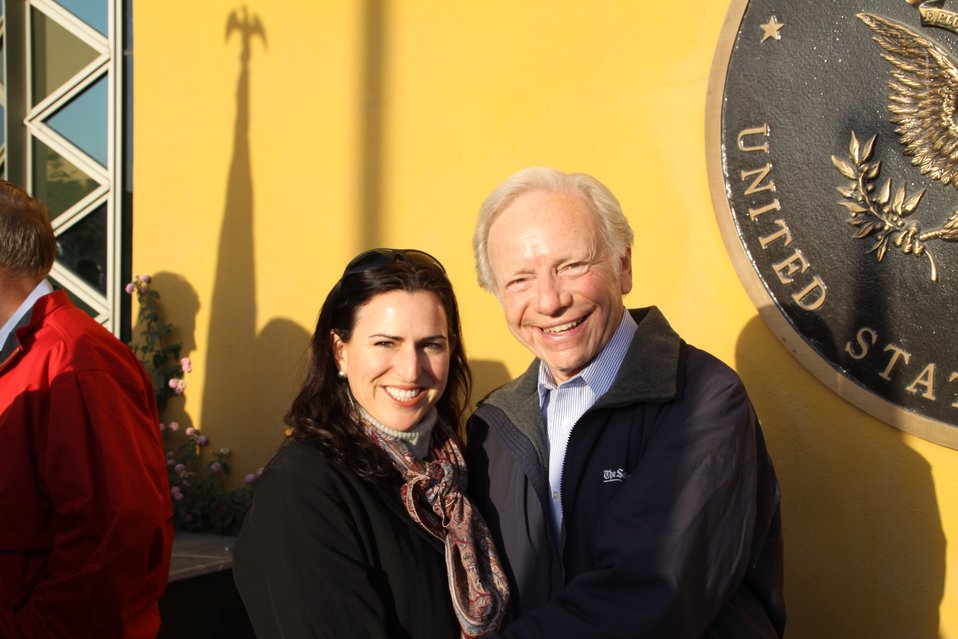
Senator Lieberman